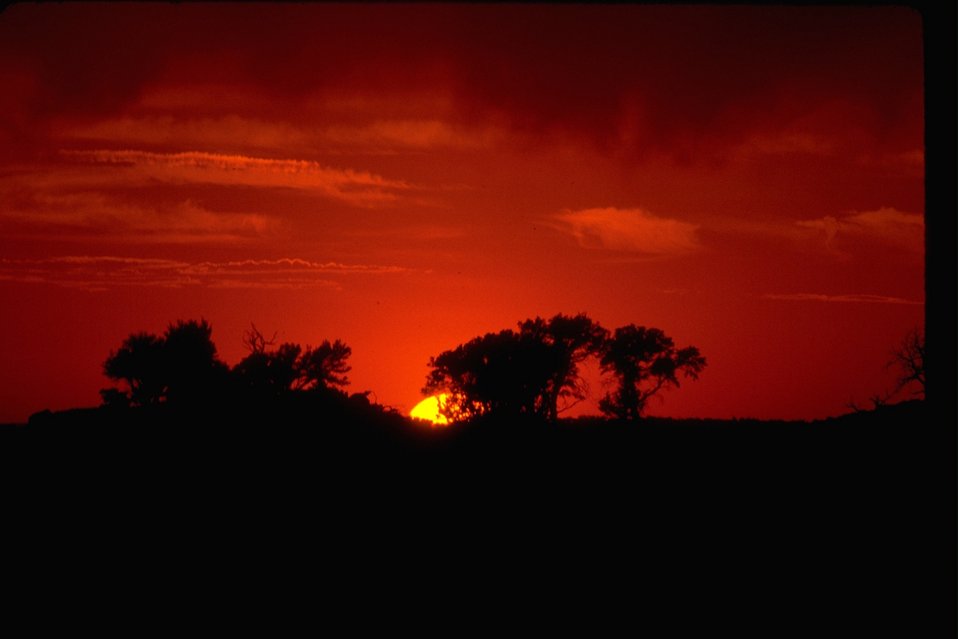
Sunset behind the Mountain Mahogany Trees on Steens Mountain.